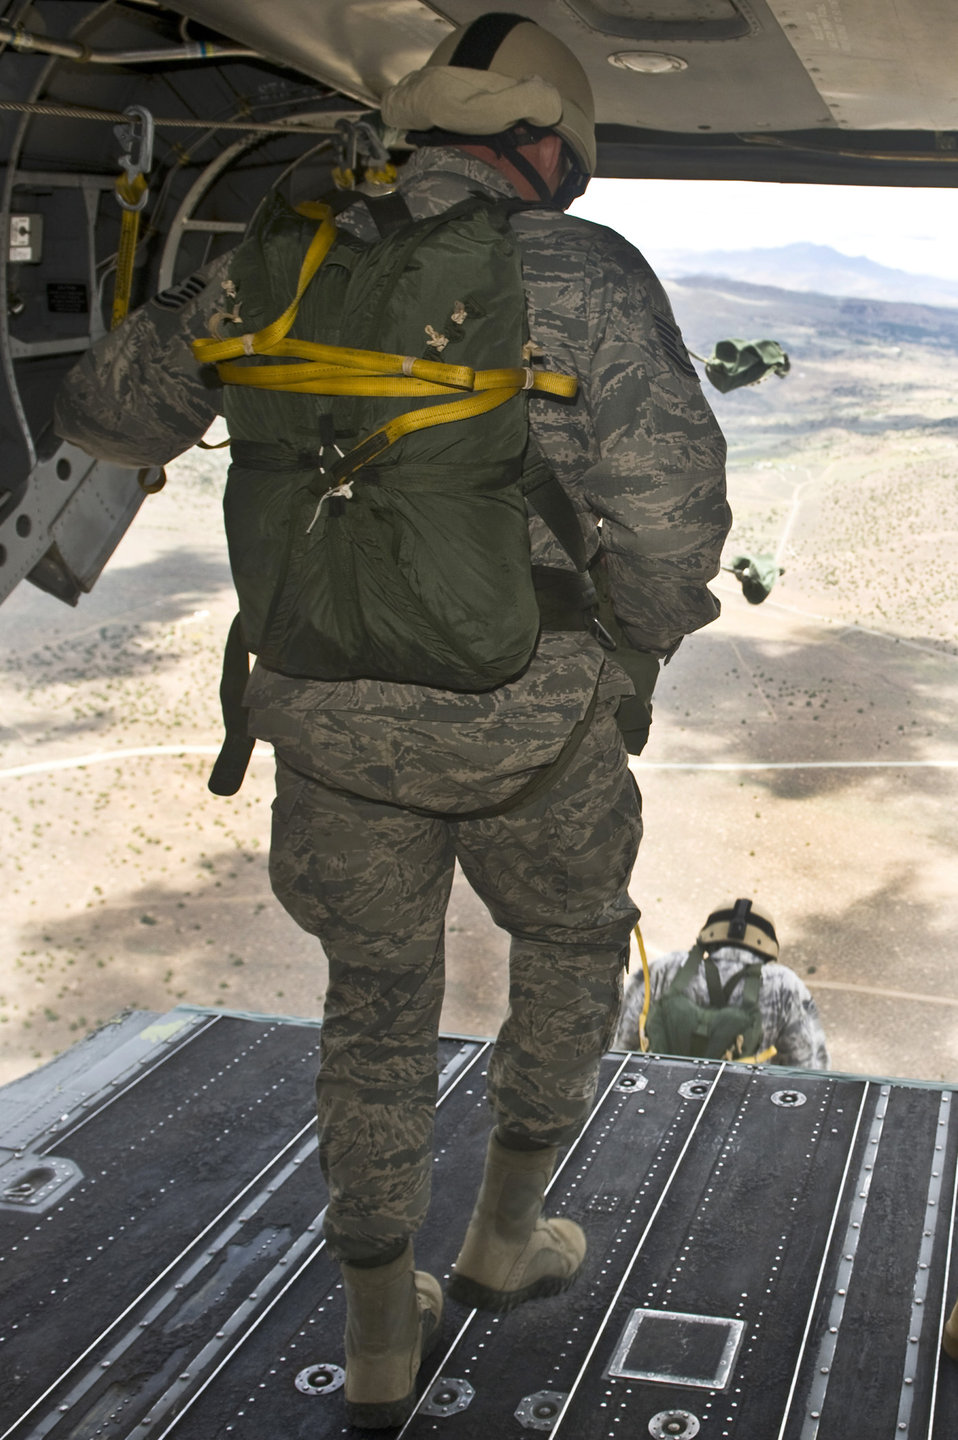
Airdrop and sling-load training

Members of the 820th RED HORSE squadron jump from a Nevada Army National Guard CH-47 Chinook helicopter June 28, 2011, above the Senator Harry Reid Readiness and Training near Stead, Nev., during airdrop and sling-load training.